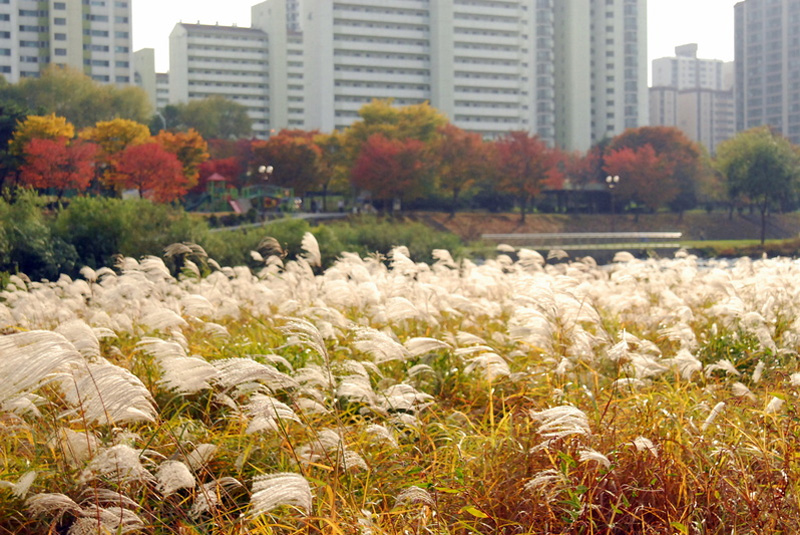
Tancheon Yongin-si Jukjeon Area(a field of reeds) 한국어: 탄천 용인 죽전지구(갈대밭)